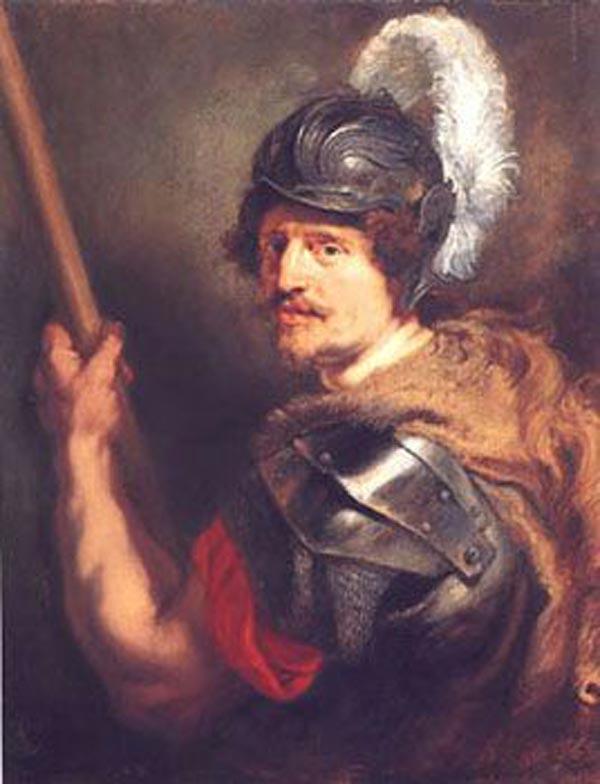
Portrait of a Man as the god Mars by Rubens